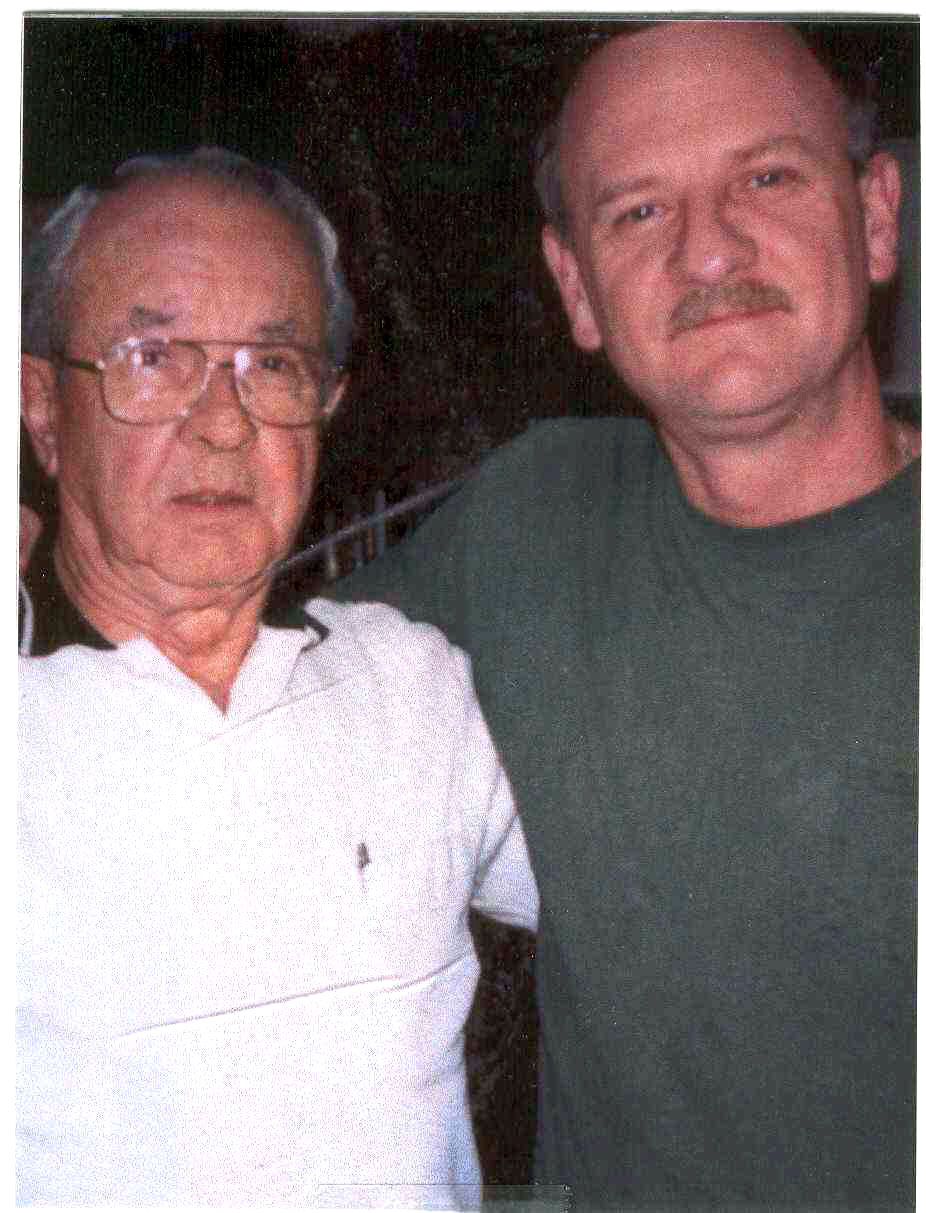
Honoring a hero: a son's final tribute to his father

Troy Curnutte, right, said his father, retired Lt. Col. Bill Curnutte, was his best friend and role model. When the senior Curnutte died in 2003, his son worked to get his father a Distinguished Flying Cross for his heroic actions during a January 1969 rescue mission over Laos.